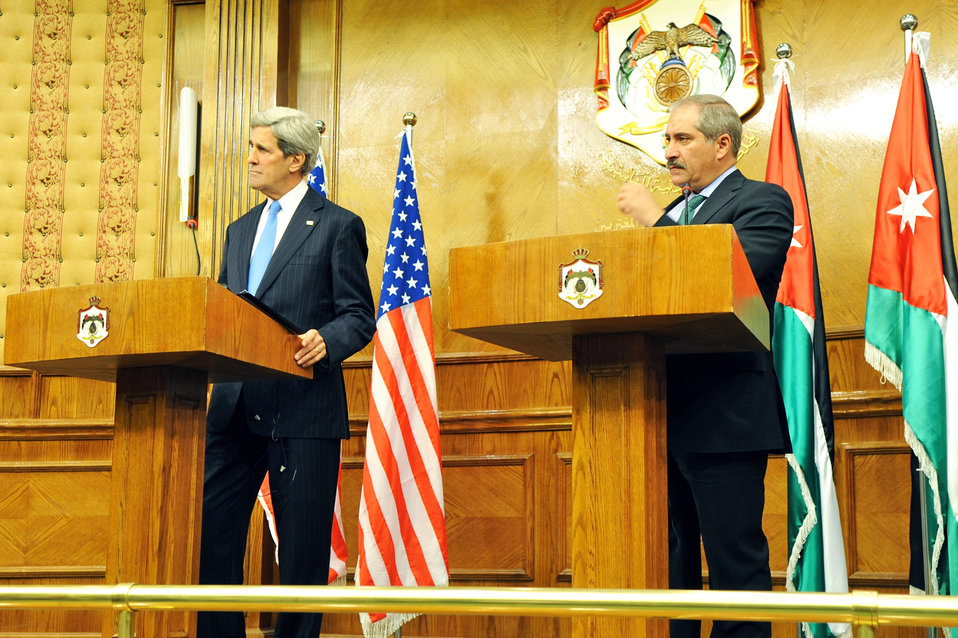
Secretary Kerry and Jordanian Foreign Minister Judeh Address Reporters

U.S. Secretary of State John Kerry and Jordanian Foreign Minister Nasser Judeh address reporters after their bilateral meeting in Amman, Jordan, on May 22, 2013.